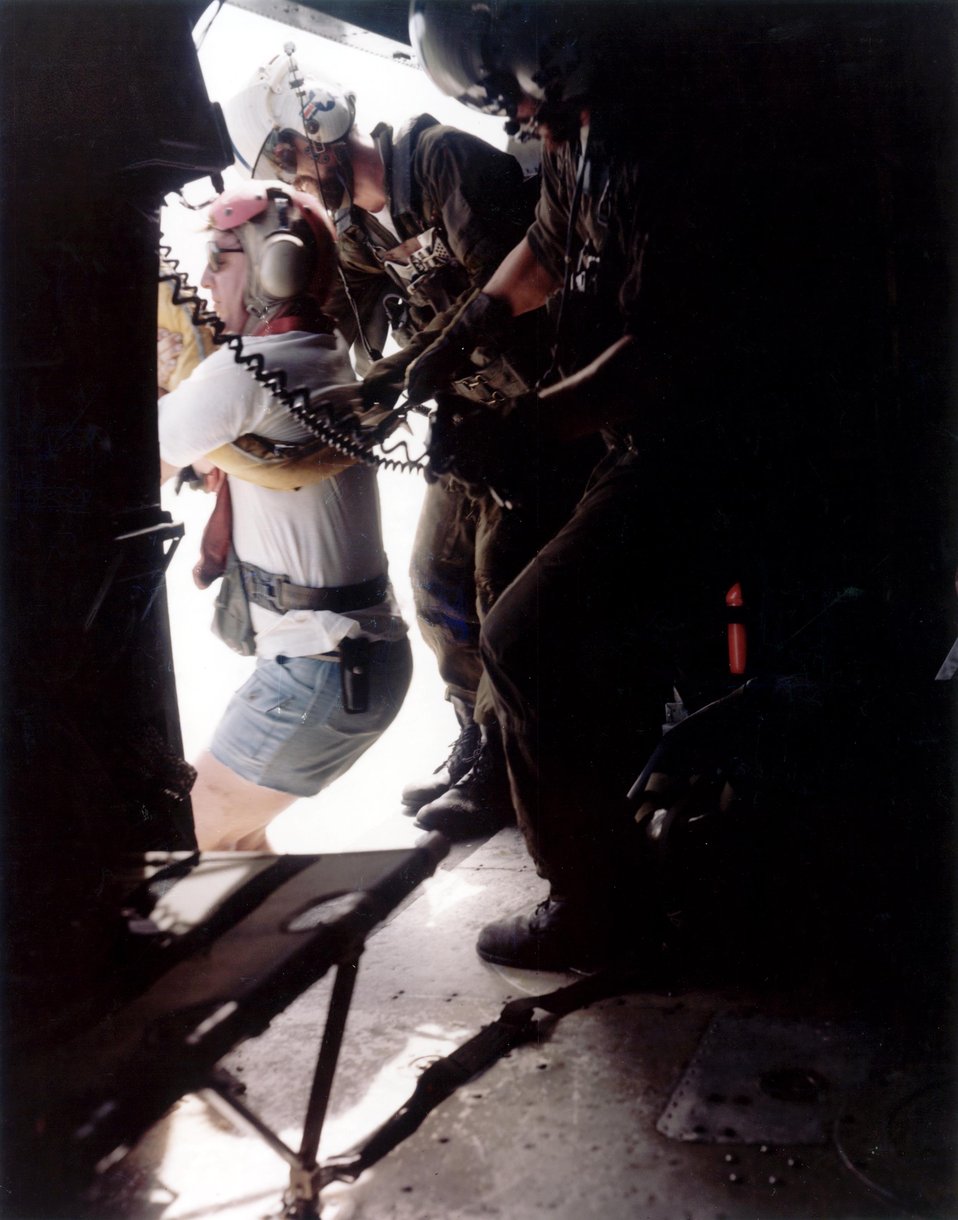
Chopper hoist being used to put survey team members into areas that are inaccessible by other methods.
11-15-78